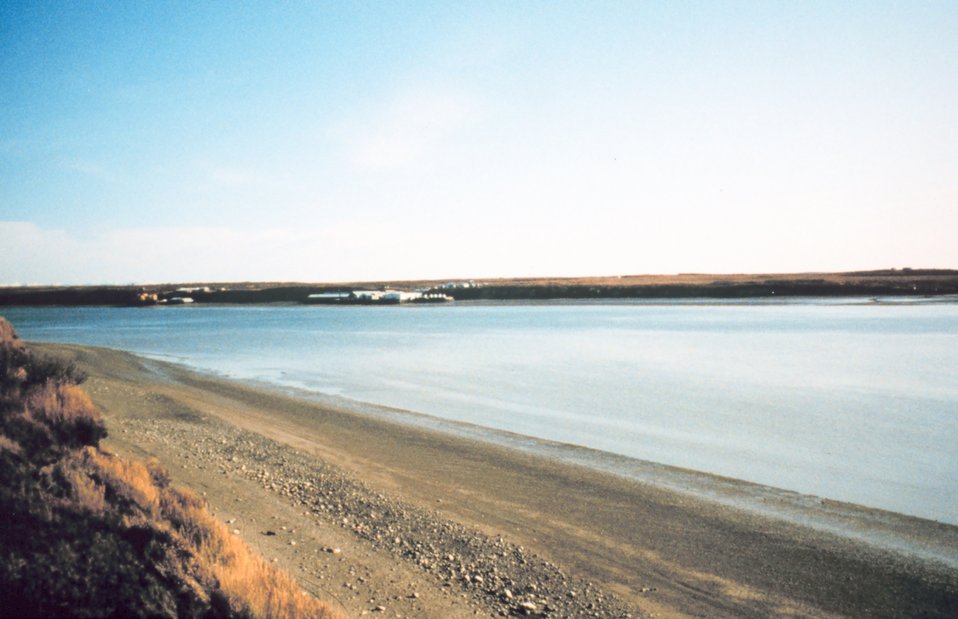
Looking south toward mouth of Naknek River near village of Naknek.